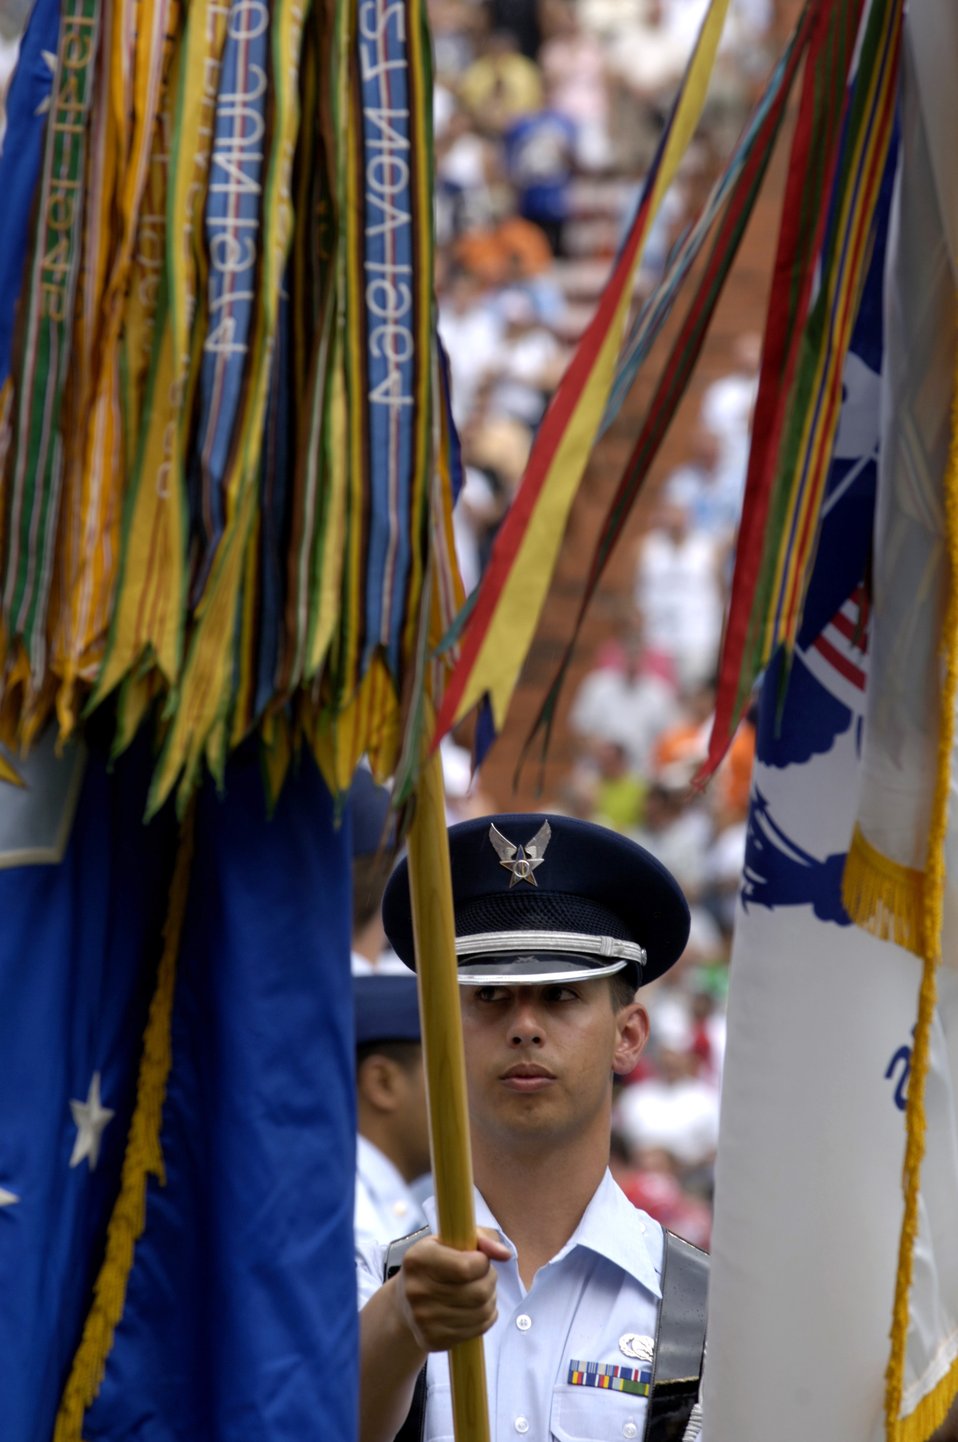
Pro Bowl honors

ALOHA STADIUM, Hawaii (AFPN) -- Senior Airman Derrick Martinez presents the Air Force flag during the opening ceremony at the 2006 Pro Bowl football game here Feb. 12. Airman Martinez is assigned to the 15th Communications Squadron at Hickam Air Force Base.